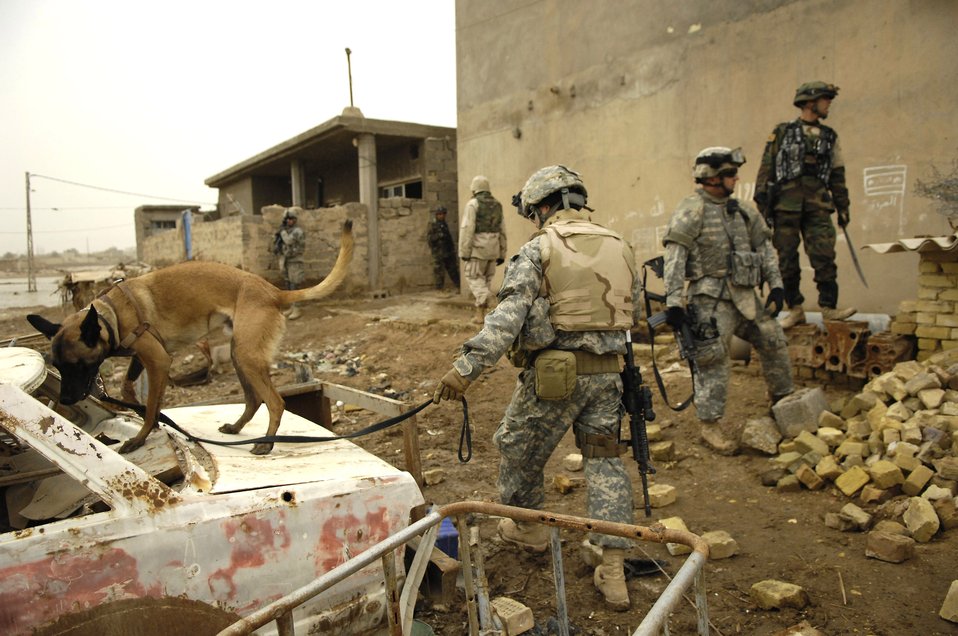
Airmen excel in nontraditional combat roles

Tech. Sgt. Harvey Holt and his military working dog accompany U.S. and Iraqi soldiers Feb. 6 during a patrol in Kahn Bani Sahd, Iraq. Airmen continue to excel in nontraditional combat roles in support of combatant commanders' requirements where Airmen are deployed to assist Soldiers.